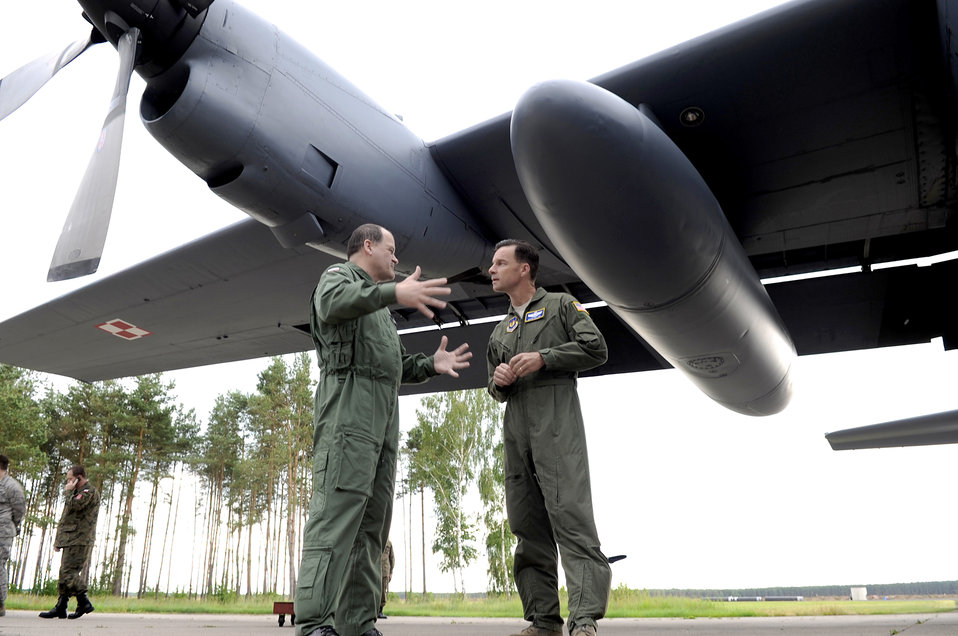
General Dillon's visit to Powidz Air Base in Poland

U.S. Air Force Brig. Gen. Mark Dillon and Polish air force Brig. Gen. Tadeusz discuss Polish aircraft June 21, 2010 on Powidz Air Base, Poland. General Dillon visited Poland to sign a letter of intention designating the 86th Airlift Wing and the 3rd Airlift Wing as sister wings and to build partnerships. General Dillon is the 86th AW commander and General Mikutel is the 3rd AW commander.